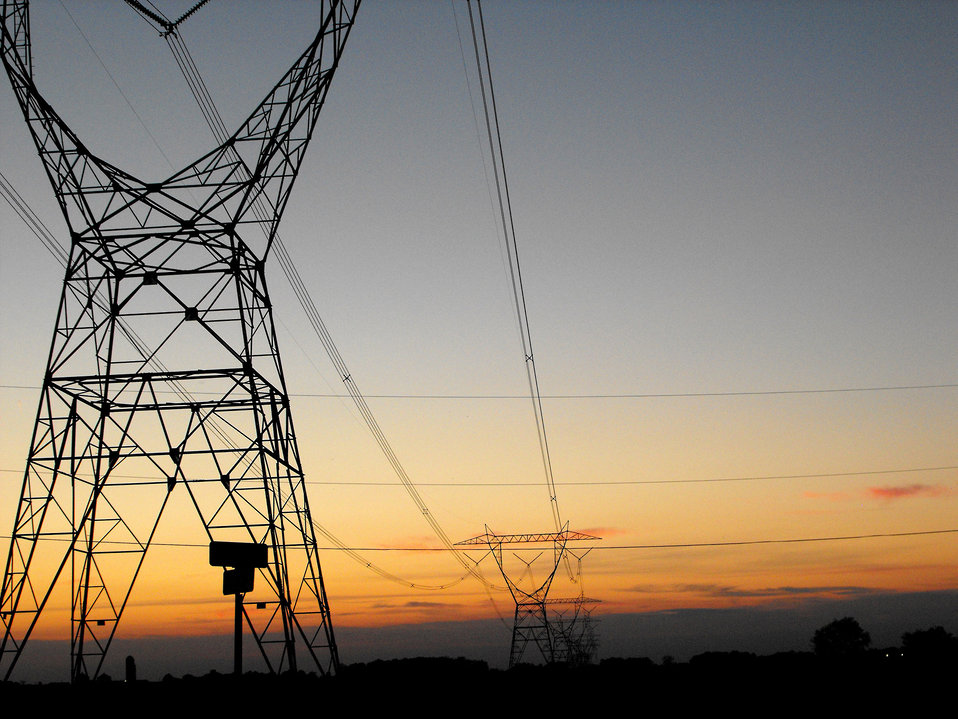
Power line at sun set in northern indiana.